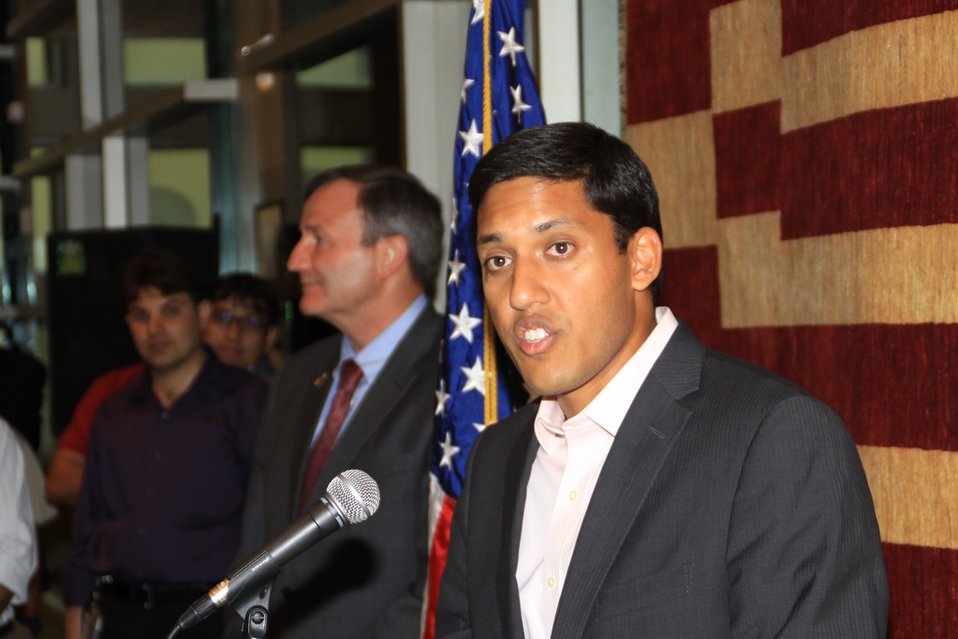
US Embassy Town Hall July 21, 2010